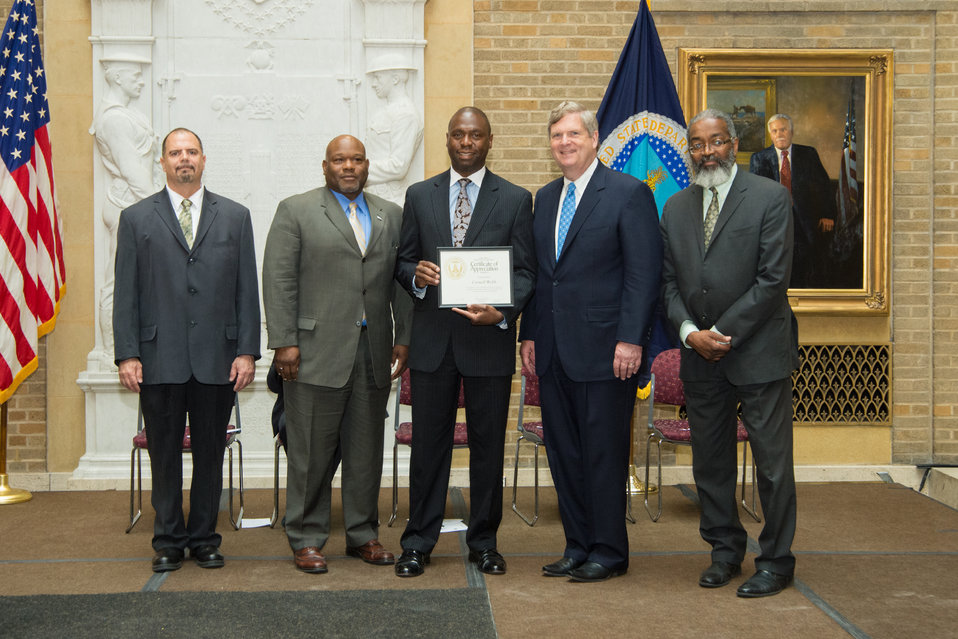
U.S. Department of Agriculture (USDA) Risk Management Agency (RMA) Missouri Cornell Webb receives the Unsung Hero Award from USDA’s Organization of Professional Employees President (OPEDA) Louis Iacoletti, USDA RMA Associate Administrator Michael Alston, Agriculture Secretary Tom Vilsack and USDA Assistant Secretary for Administration Dr. Gregory Parham at USDA in Washington, D.C. on Wednesday, May 7, 2014.